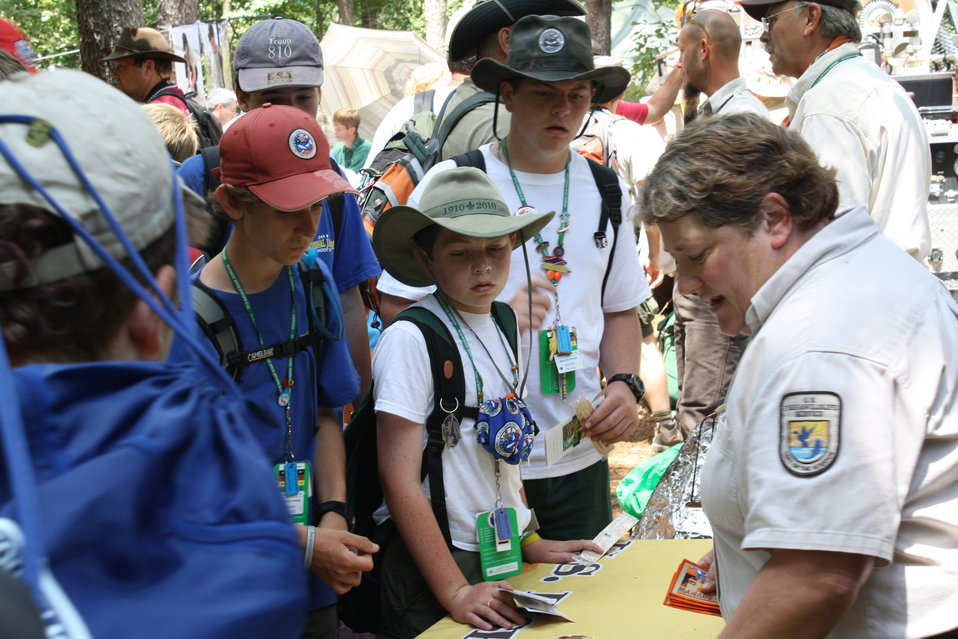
Boy Scout Jamboree 2010